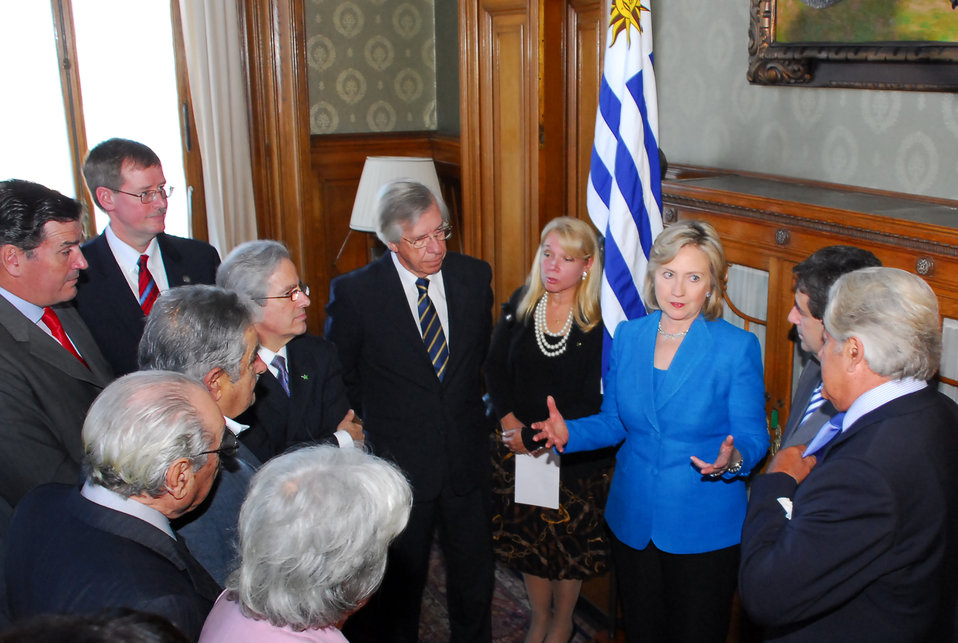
Secretary Clinton Meets With Uruguay President-elect

U.S. Secretary of State Hillary Rodham Clinton meets with Uruguay President-elect Jose Mujica and opposition leaders in Montevideo, Uruguay March 1, 2010.